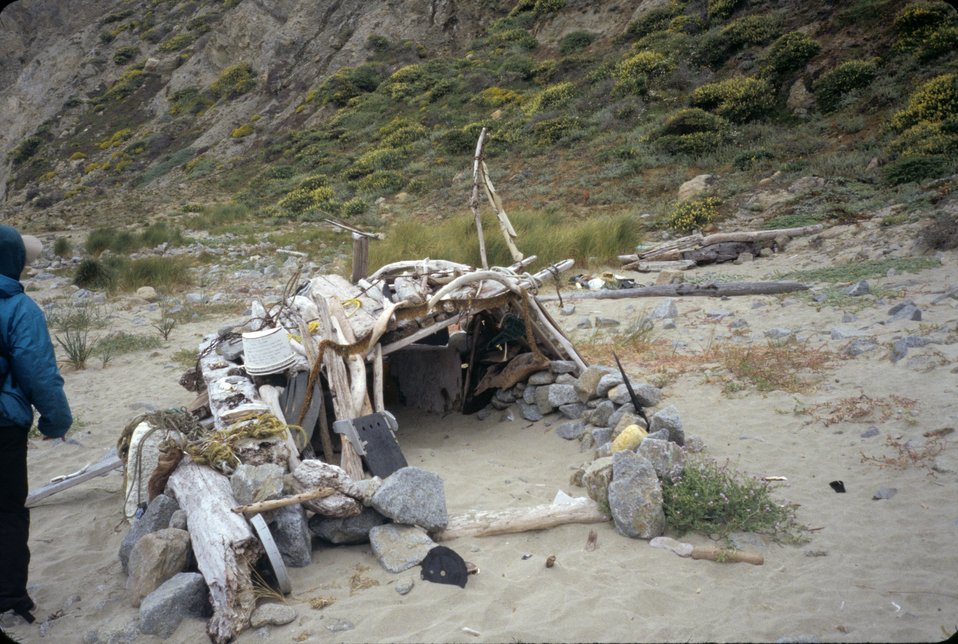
Point Reyes Great Beach. A beach house composed primarily of natural materials.